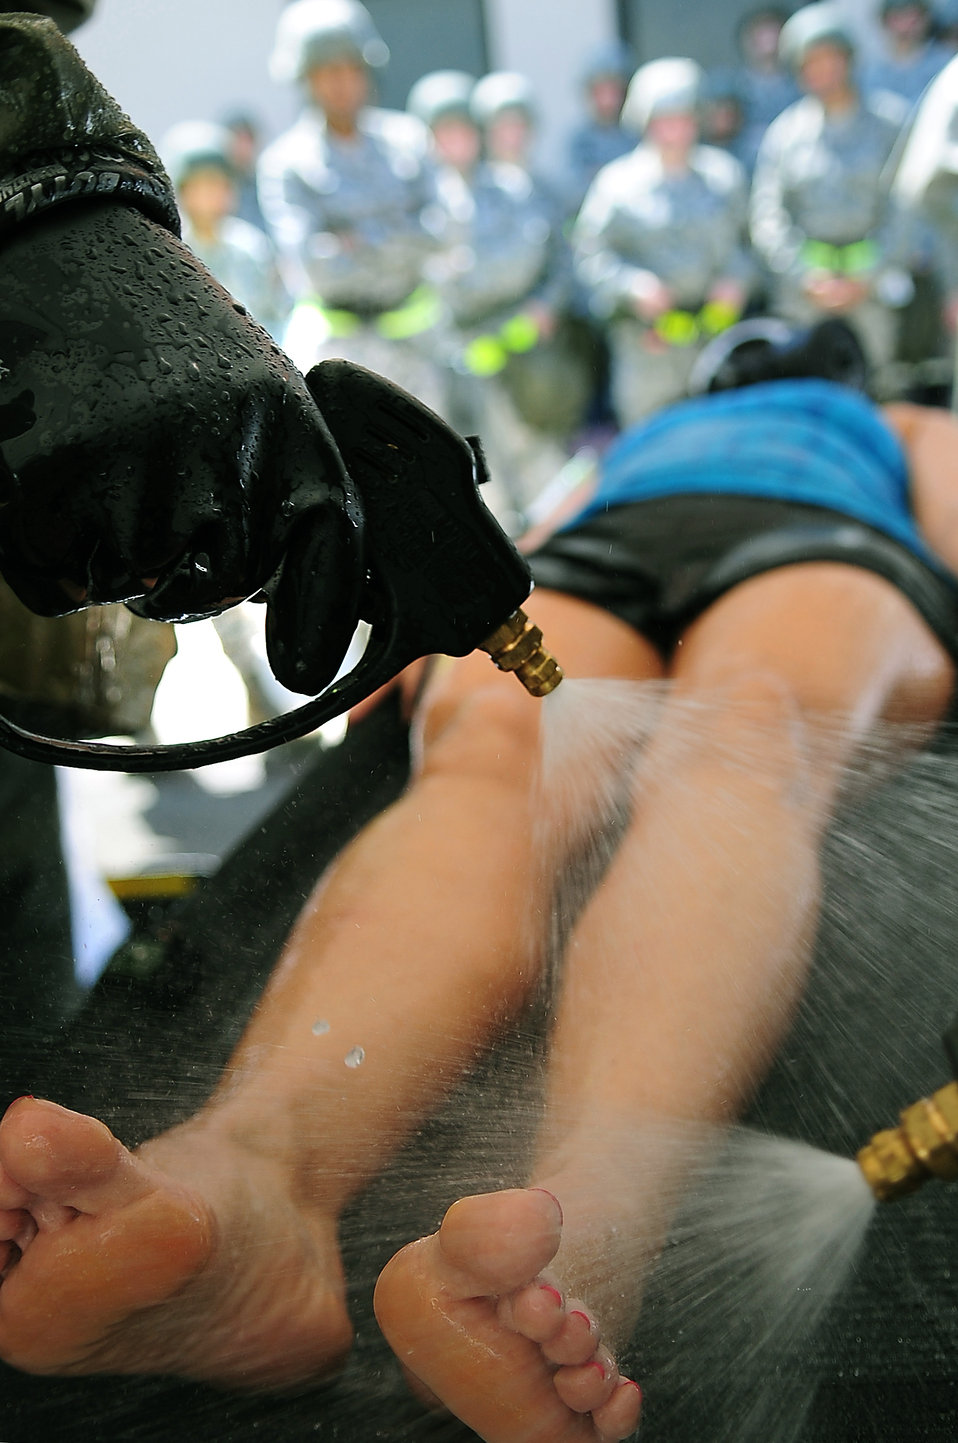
That's cold!

Maj. Sharon Franklin is